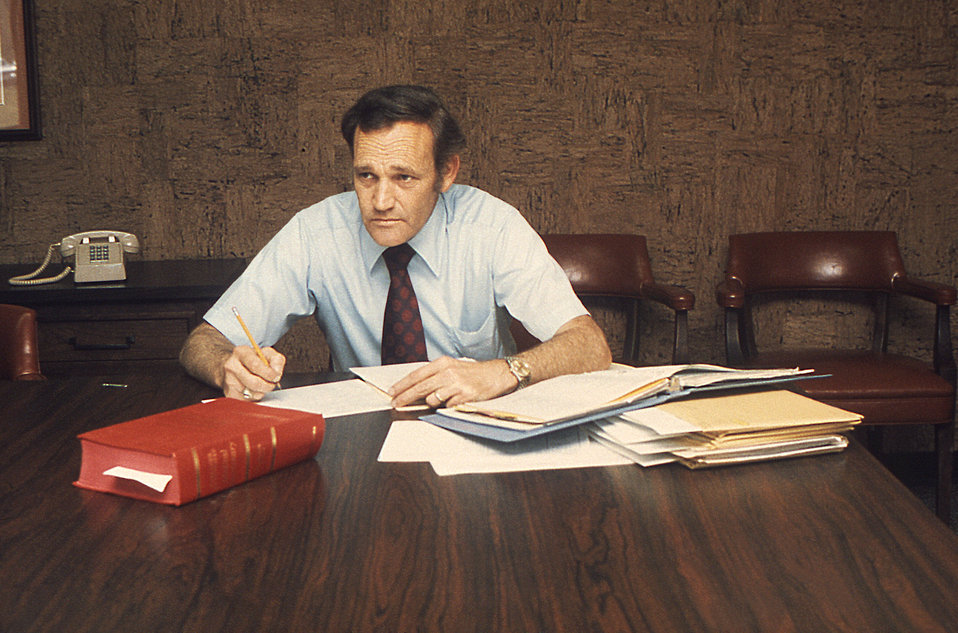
This historic image depicted a Centers for Disease Control (CDC) public health adviser working on a pilot study known as SENIC (Study on the Efficacy of Nosocomial Infection Control), which measured the accuracy of a system, designed by Robert W. Haley, M.D., that detected hospital-acquired infections through the analysis of medical records. SENIC was ultimately used to measure the change of infection rates in a random sample of U.S. hospitals. In this picture he appeared to be doing an in-line quality control analysis, by comparing the agreement of duplicate reviews of the same medical records.